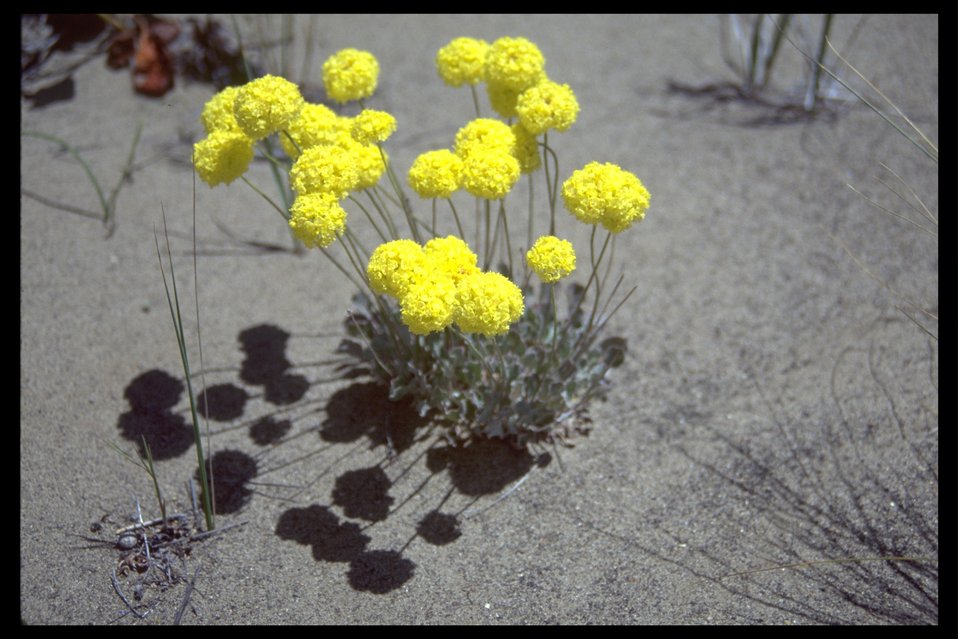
Oval-leaved buck wheat at Coyote Lake Sand Dunes in the Alvord Desert WSA. (2-74)